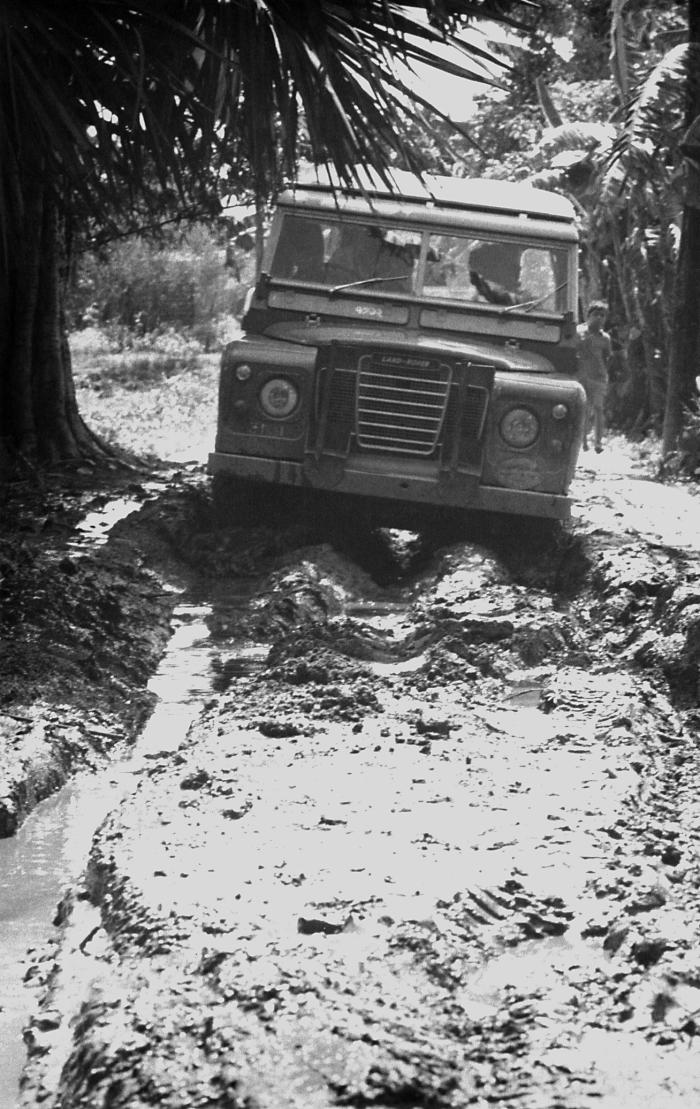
This 1975 photograph, by Pierre Claquin, M.D., B.A.C., who at the time was a member of the World Health Organization's Smallpox Eradication Program, was provided by former E.I.S. officer, Stanley O. Foster M.D., M.P.H., and was one of a series entitled 'The Story of One Smallpox Jeep', which depicted the travails faced by the jeep, and its occupants of public health practitioners, as they road through the Bangladesh countryside in an attempt to eradicate smallpox from the country.